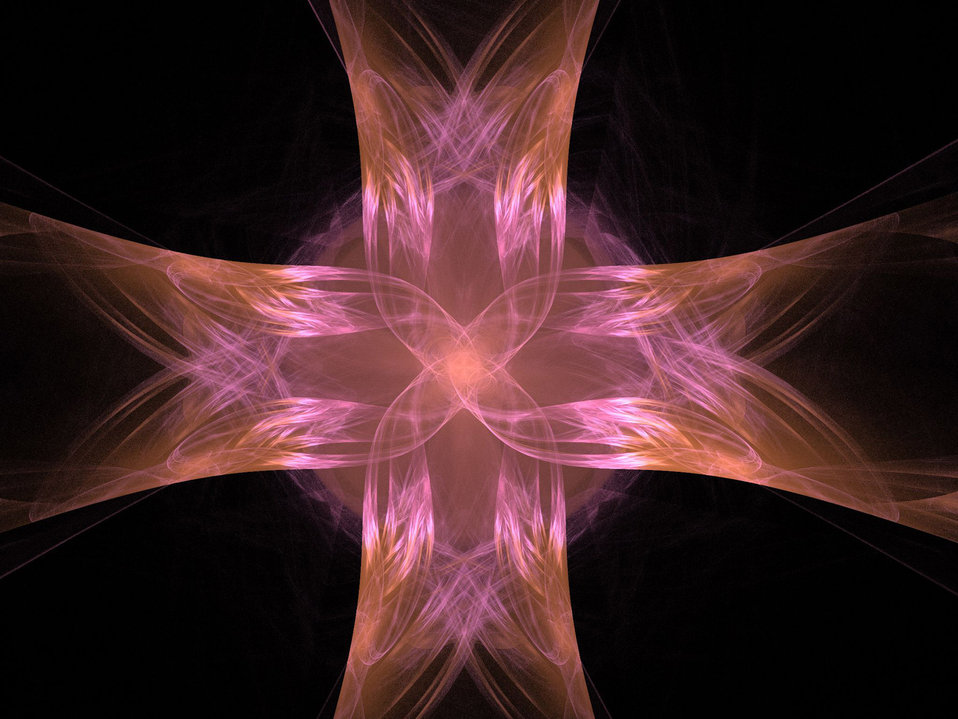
A colourful cross

A fractal cross.